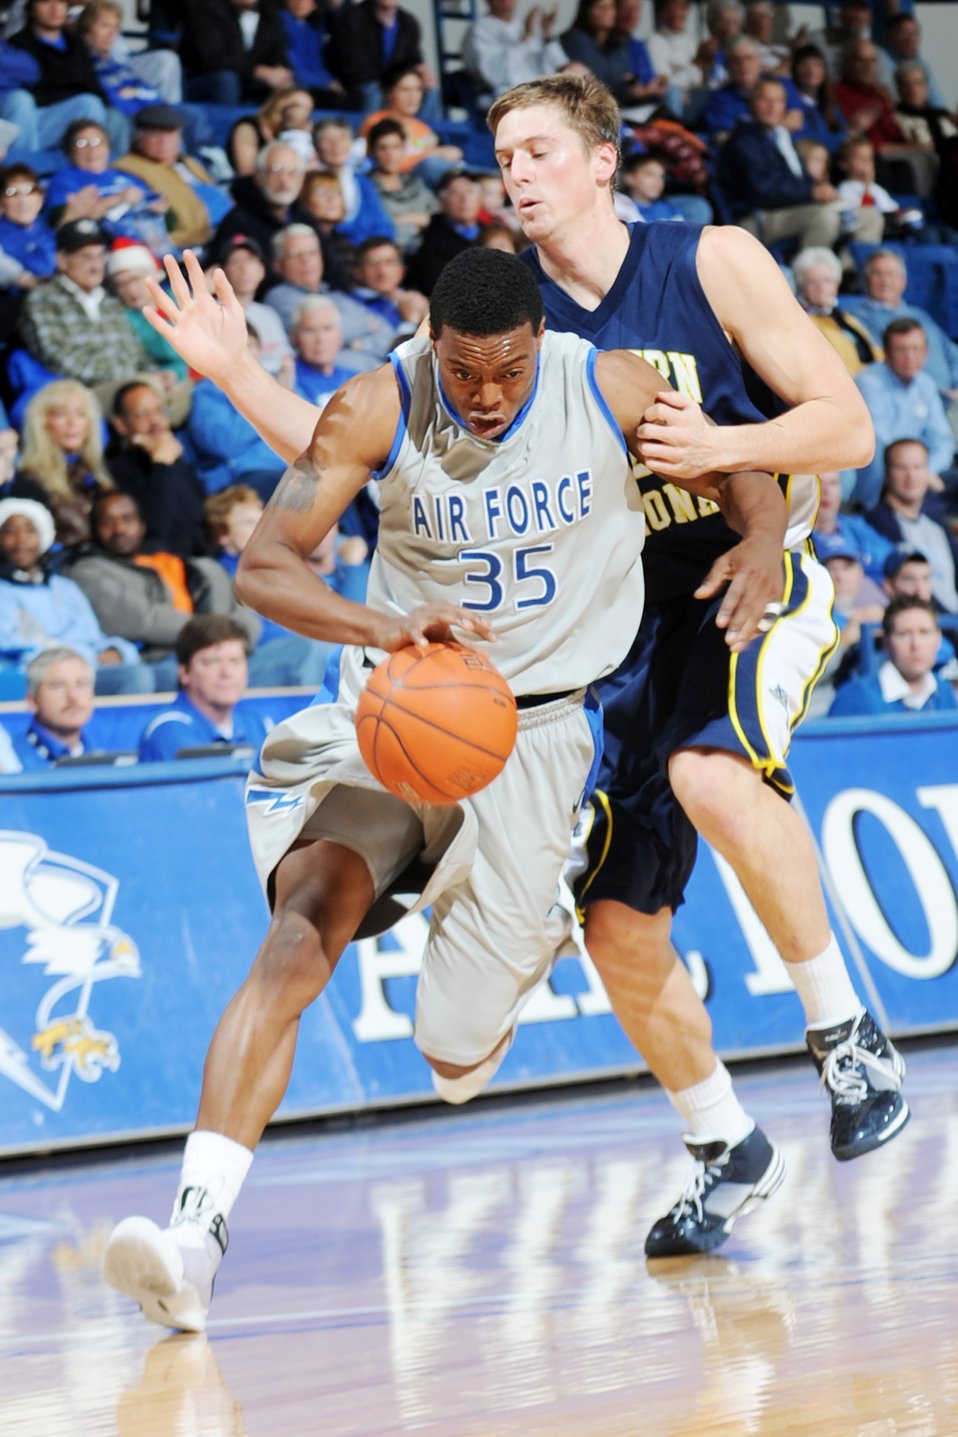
Falcons vs Northern Arizona

Air Force Academy junior guard Evan Washington drives the ball towards the basket past senior forward Northern Arizona's Nick Larson at the Academy's Clune Arena Dec. 19, 2009.